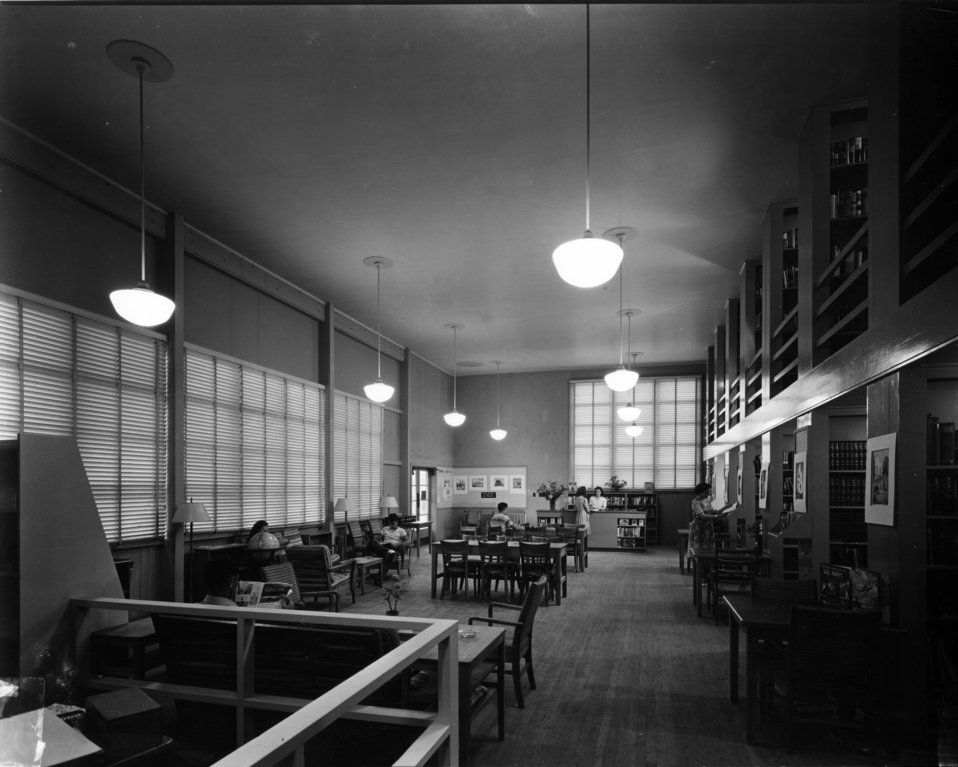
Services at Oak Ridge